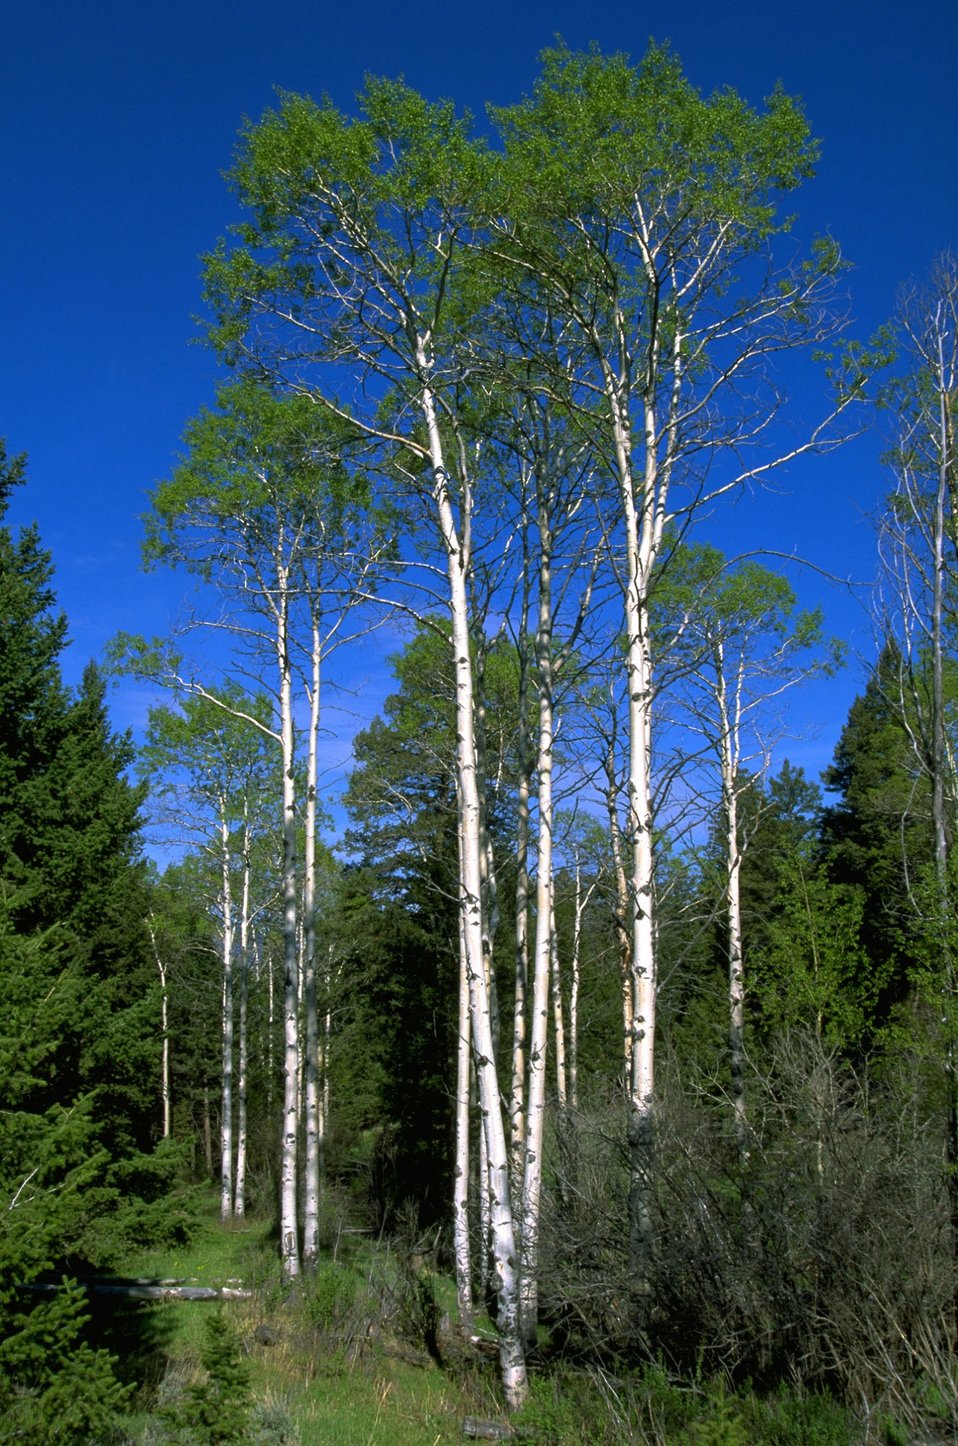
Tall aspen trees along the Maclean Road